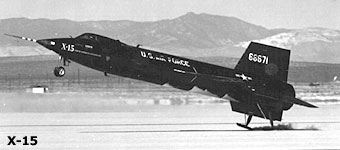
X-15 aircraft, history spotlight graphic